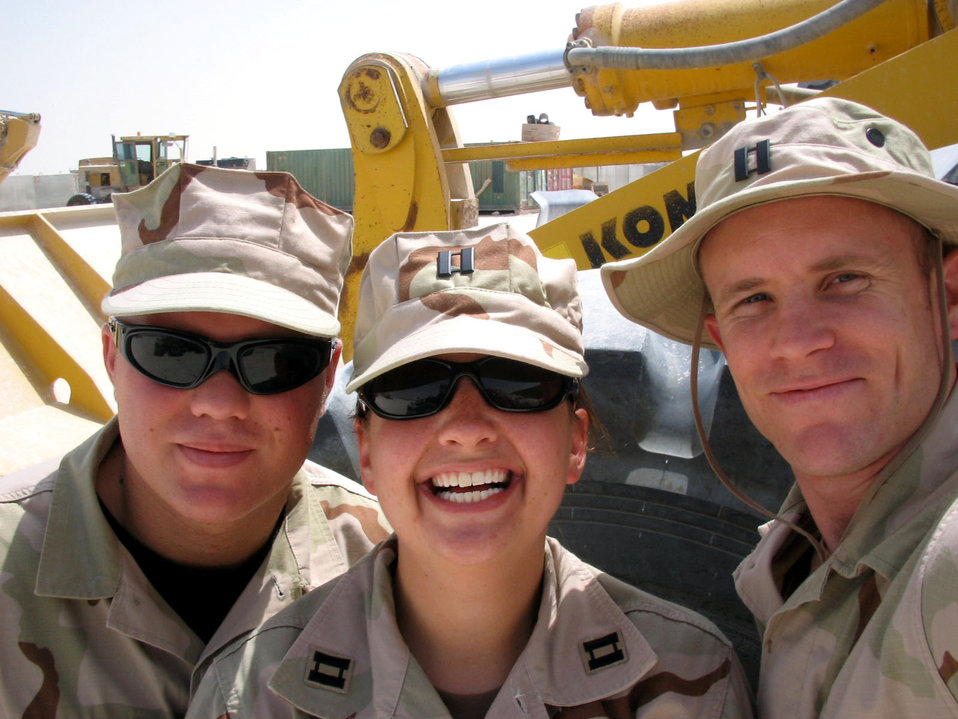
31st Fighter Wing deployment in 2005

Capt. Jadee Bell and two unidentified members of the 31st Civil Engineer Squadron heavy equipment flight stand in front of one of their loaders ata forward location in Southwest Asia in 2005.